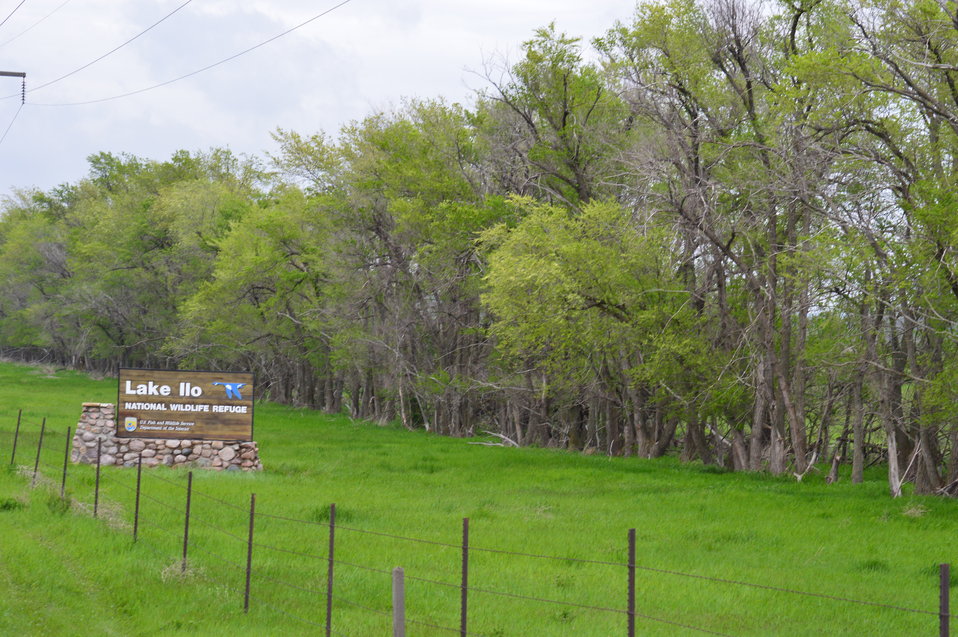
Lake Ilo NWR sign

National Wildlife Refuge sign at the entrance to Lake Ilo.